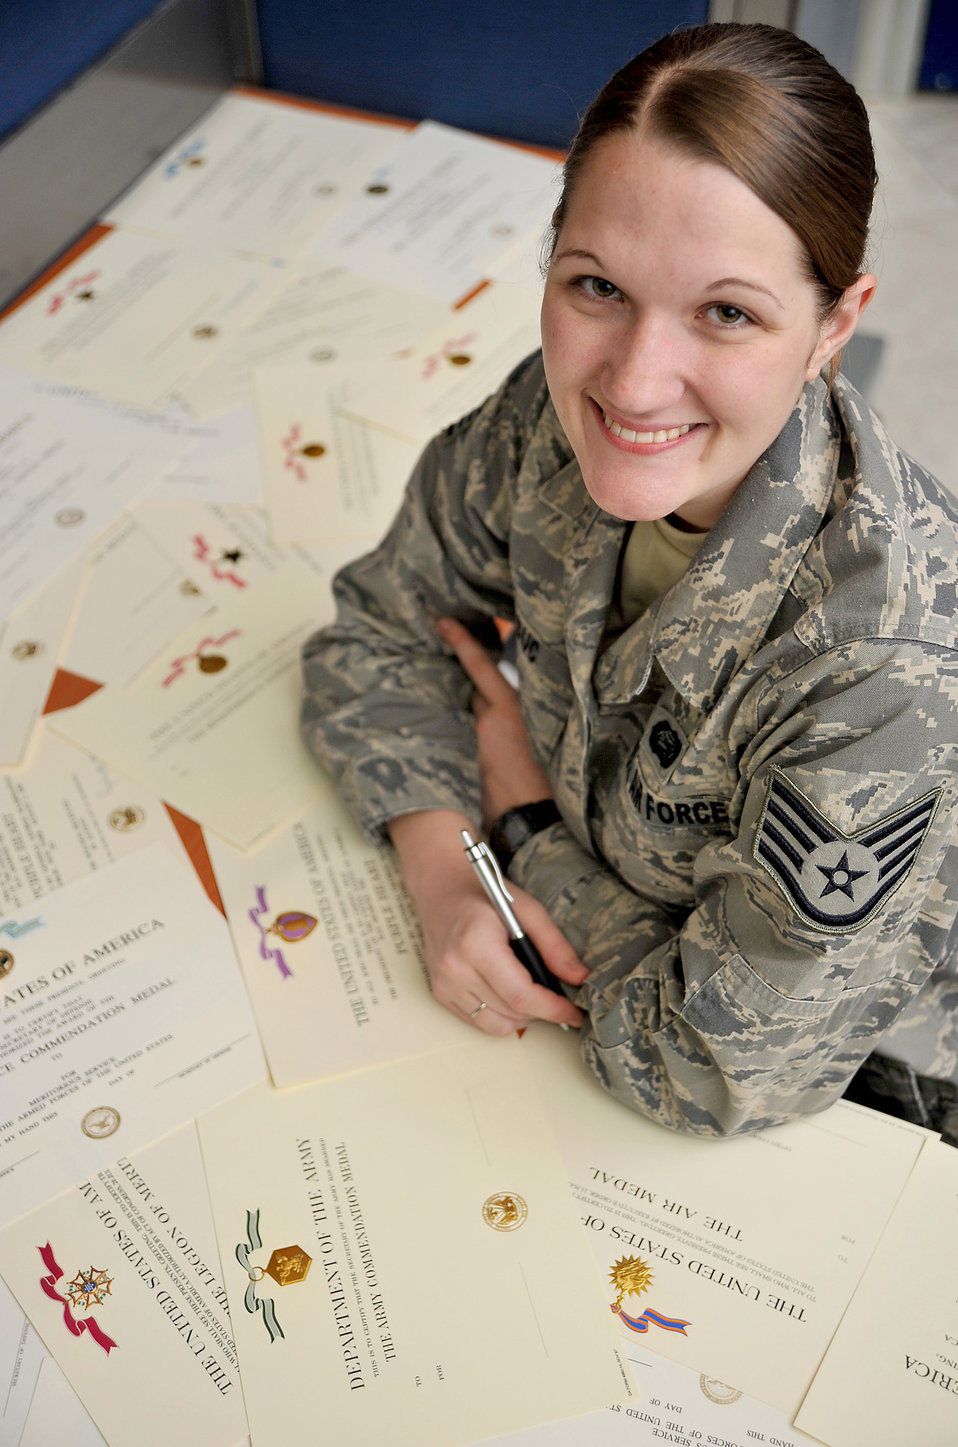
Airman recognizes those who sacrifice

Staff Sgt. Ashley Le Duc poses for a photo Jan. 18, 2011, at Camp Victory, Iraq. Sergeant Le Duc is a manpower and personnel awards NCO. She works in a joint military unit combined with members of the Air Force, Army, Navy and Marines.